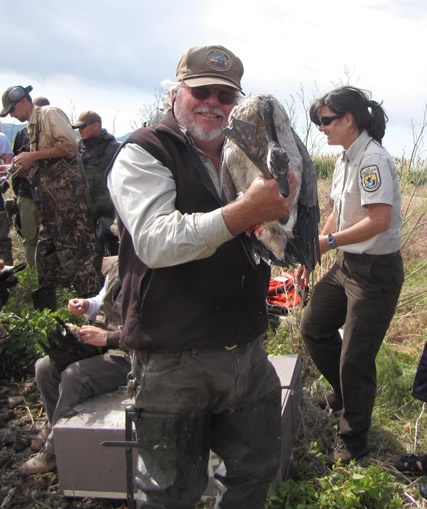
Bird Banding

Holding a bird for banding.